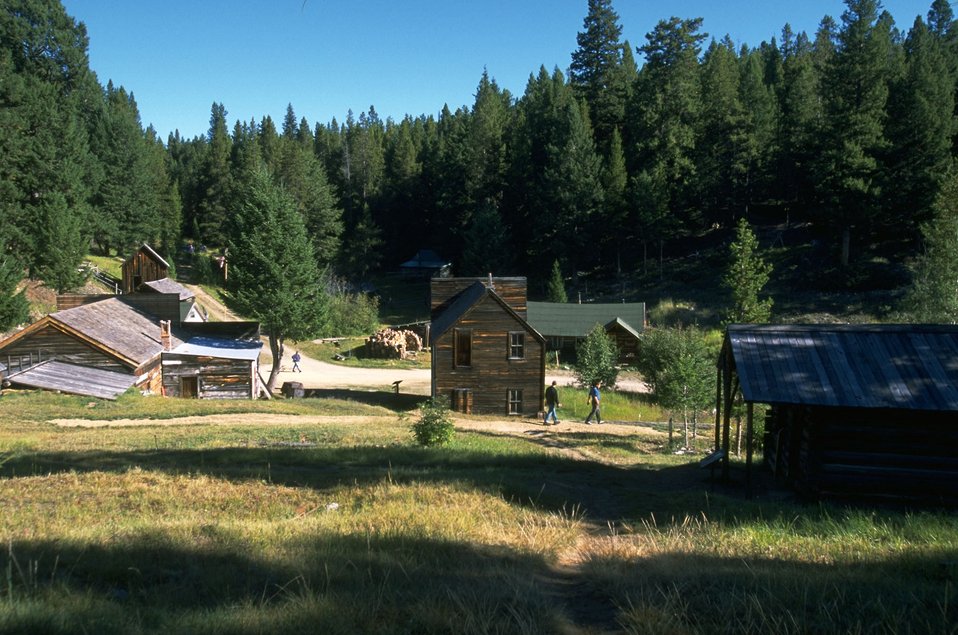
Garnet Ghost Town with ""honeymoon"" cabin on the right